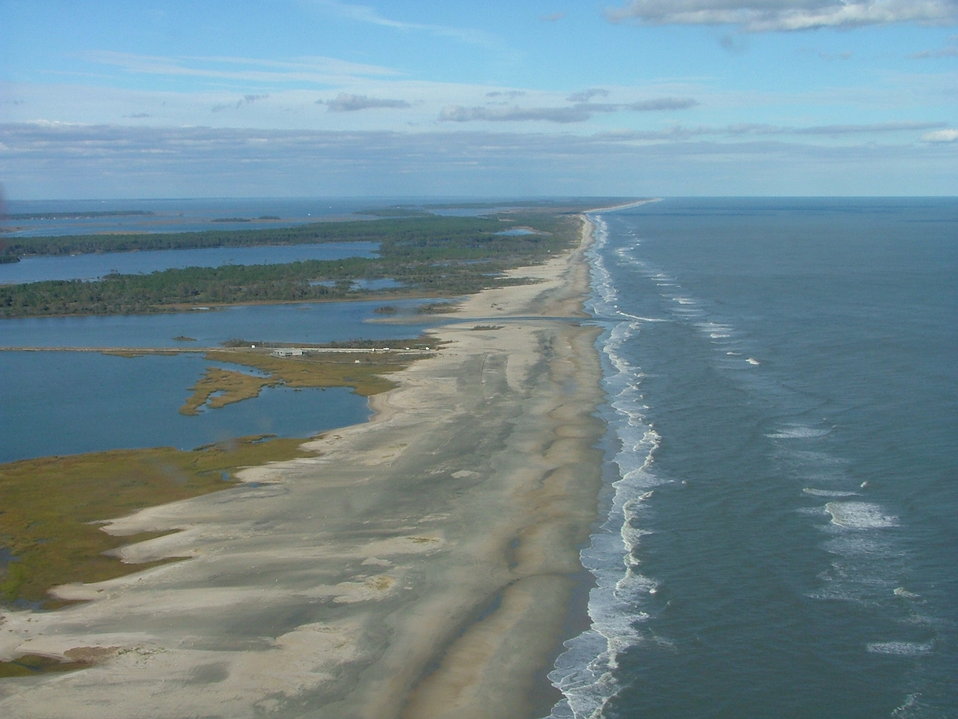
Chincoteague National Wildlife Refuge (VA)

Expansive view of Hurricane Sandy's legacy.